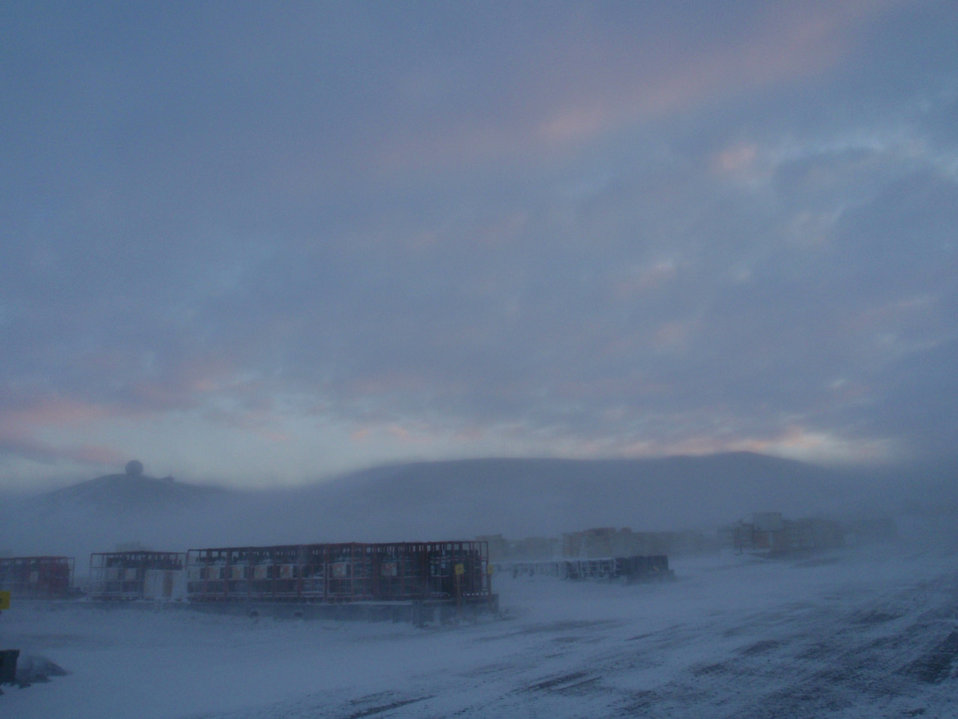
Blowing snow at mcmurdo

Blowing snow at "the ballpark" (storage area) at mcmurdo station, antarctica. although a photograph, the snow gives it an impressionist feel..